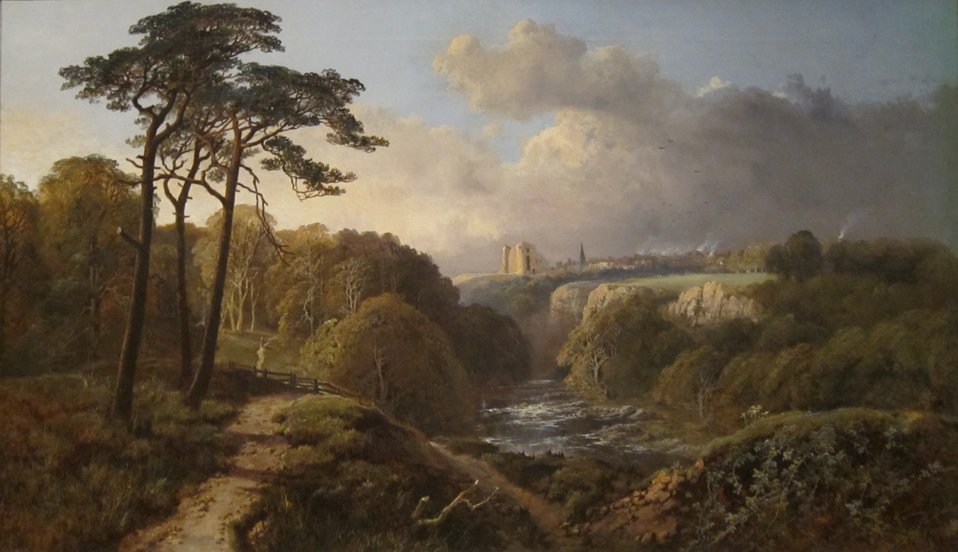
'Derbyshire Landscape' by Alexander Helwig Wyant, Dayton Art Institute